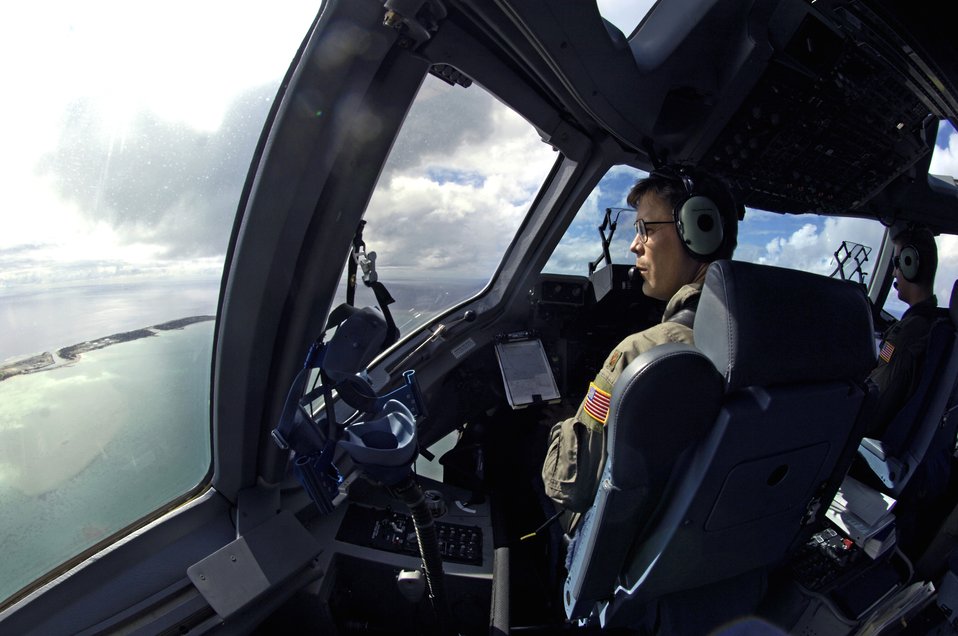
First look at Wake: Less damage than feared

Maj. Joseph Golovach checks out the runway during a flyby of Wake Island before landing Sept. 12. The C-17 brought a 53-person team to assess damage left by Super Typhoon Ioke after it struck the island Aug. 31. Major Golovach is a pilot from the 535th Airlift Squadron at Hickam Air Force Base, Hawaii.